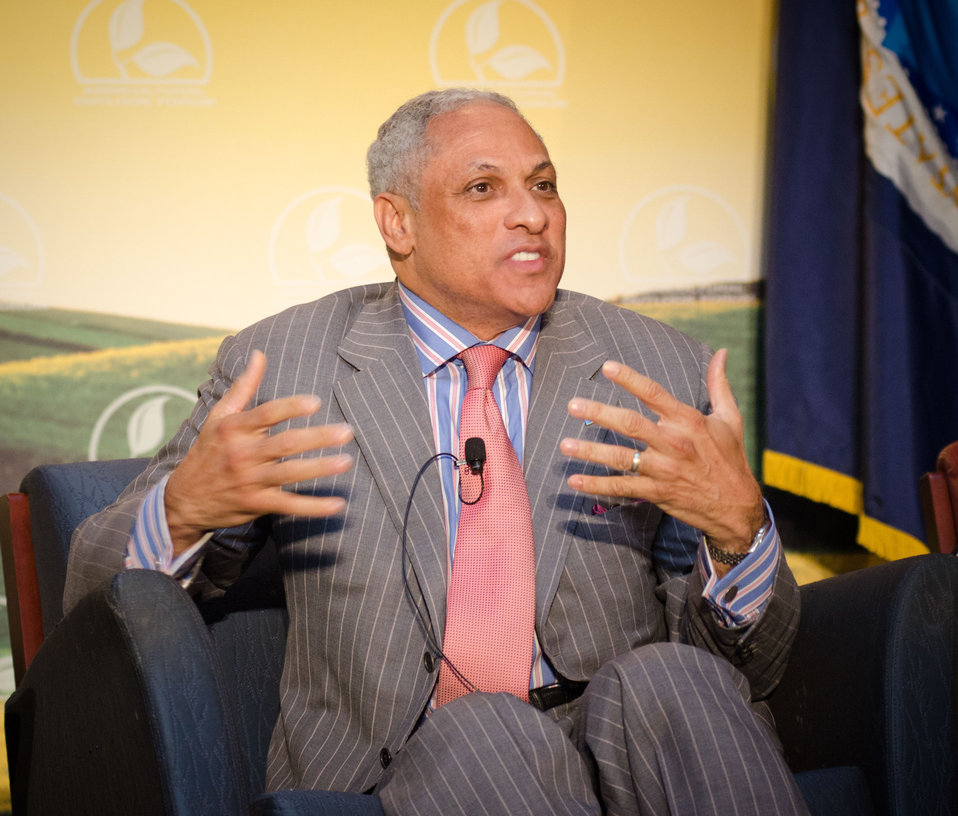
At the 2012 Agricultural Outlook Forum, “Moving Agriculture Forward” in Arlington, VA, held on Thursday, February 23, 2012, 7 former Secretaries of Agriculture sat on the plenary panel “Visions of the Future” hosted by current Agriculture Secretary Tom Vilsack. Congressman Mike Espy (MS) speaks out during the panel discussions.